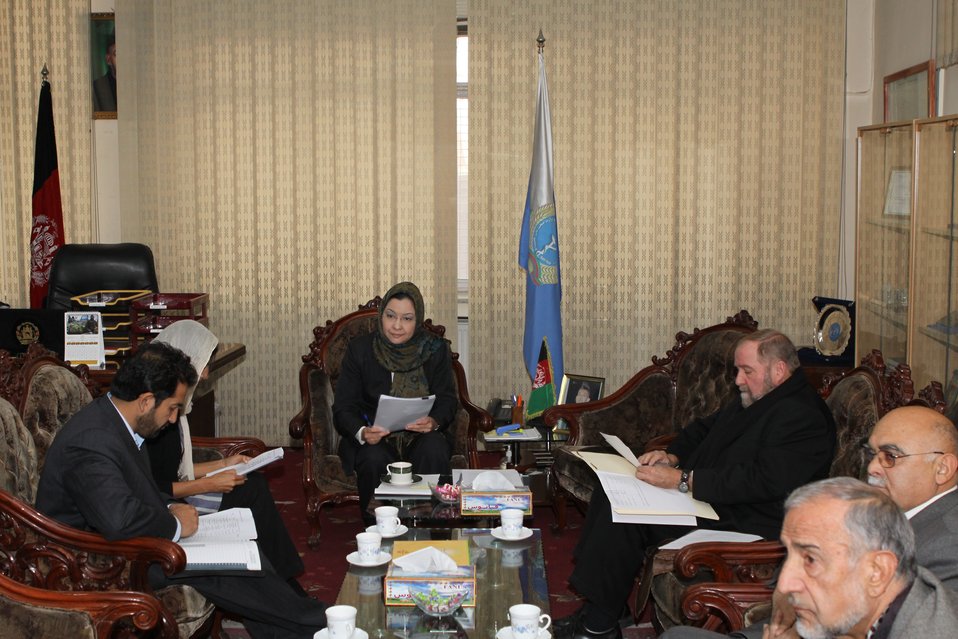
Community Health Workers Celebrated

Kabul, Afghanistan | December 5, 2010 — In support of the United Nations designated International Volunteer Day for Economic and Social Development, Afghanistan’s Ministry of Public Health celebrated its annual Community Health Worker Day today. Acting Minister of Public Health Dr. Suraya Dalil, USAID Senior Deputy Mission Director Robert Hellyer, other government officials, and international donors joined in recognizing the critical contribution of community health workers in Afghanistan and encouraging them to continue their voluntary support to their communities.
The event praised the contributions of the more than 22,000 volunteers throughout the country who deliver community level health-education, counseling, and services out of village health posts located in private homes. The Ministry of Public Health envisioned that community-based healthcare programs will actively encourage communities and families to adopt healthy lifestyles and behaviors, and provide families access to high quality and socially acceptable preventative medicine and life-saving services.
“We have 22,000 community health workers in Afghanistan that are able to implement the basic and standard medicines. They all have been trained through a job description,” said Minister Dalil. Addressing the health workers, she added, “I am proud and feel powerful that I have people like you.”
USAID-funded health projects collaborate closely with the Ministry of Public Health to improve the health and nutritional status of Afghans, provide quality primary healthcare, and promote healthy behaviors at the community and household-levels. USAID supported the training of more than 9,000 of the volunteer community health workers currently working in Afghanistan.
“On behalf of the American people, I congratulate the Community Health Workers for their diligence to gain the skills and knowledge necessary to serve their communities in this important role,” said USAID Senior Deputy Mission Director Hellyer. “USAID strongly supports community based health care and believes that quality community-based health services are essential to reaching Afghanistan’s Millennium Development Goals.”
To support the Basic Package of Health Services, USAID assisted in developing the community health worker training manual, helped train community health worker supervisors and master-trainers, facilitated in-service training, and produced and developed reporting tools, job aids, and education materials.